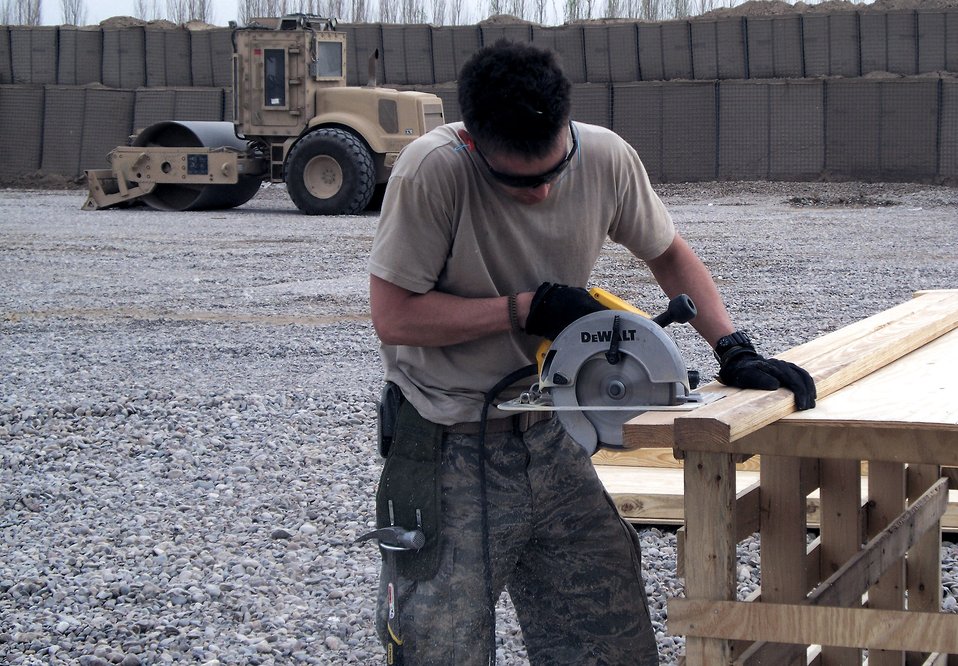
CE Airmen complete projects to benefit U.S., Iraqi army

Airman 1st Class John Owings saws wall studs to be used in the construction of buildings at the new Joint Combat Outpost Milledge, Iraq. The construction of the JCOP provides U.S. forces the ability to quickly respond and counter enemy actions in the Diyala River Valley. This area had been an Al Qaeda in Iraq stronghold and was previously considered a safe haven for insurgents in the Diyala Province. Airman Owings is deployed from Minot Air Force Base, N.D. Airman Owings is a structural journeyman with the 732nd Expeditionary Civil Engineer Squadron.